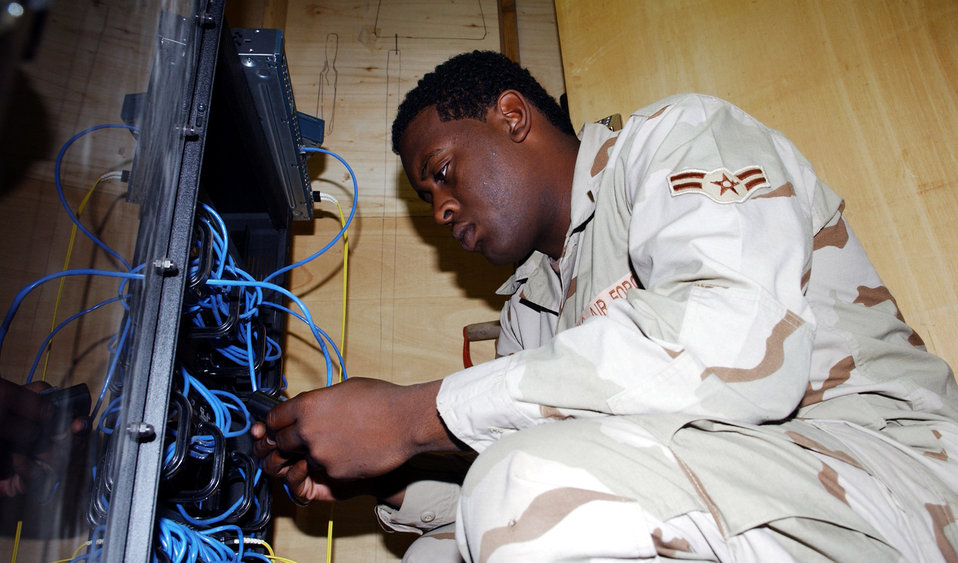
Testing the port

BAGRAM AIR BASE, Afghanistan -- Airman 1st Class Demetrill Newman tests a computer port here. Airman Newman, an information manager with the 455th Expeditionary Support Squadron, does not normally get involved in the technical side of the computer network.